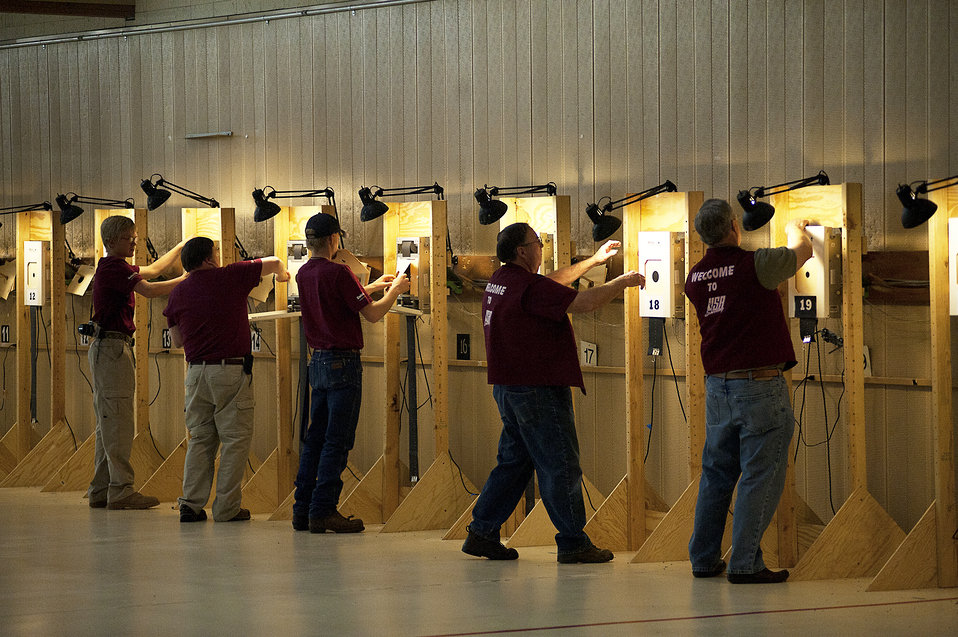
Warrior Games

Volunteers place targets on boards before a rifle competition during Warrior Games 2012 at the Olympic Training Center in Colorado Springs, Colo., May 3, 2012.